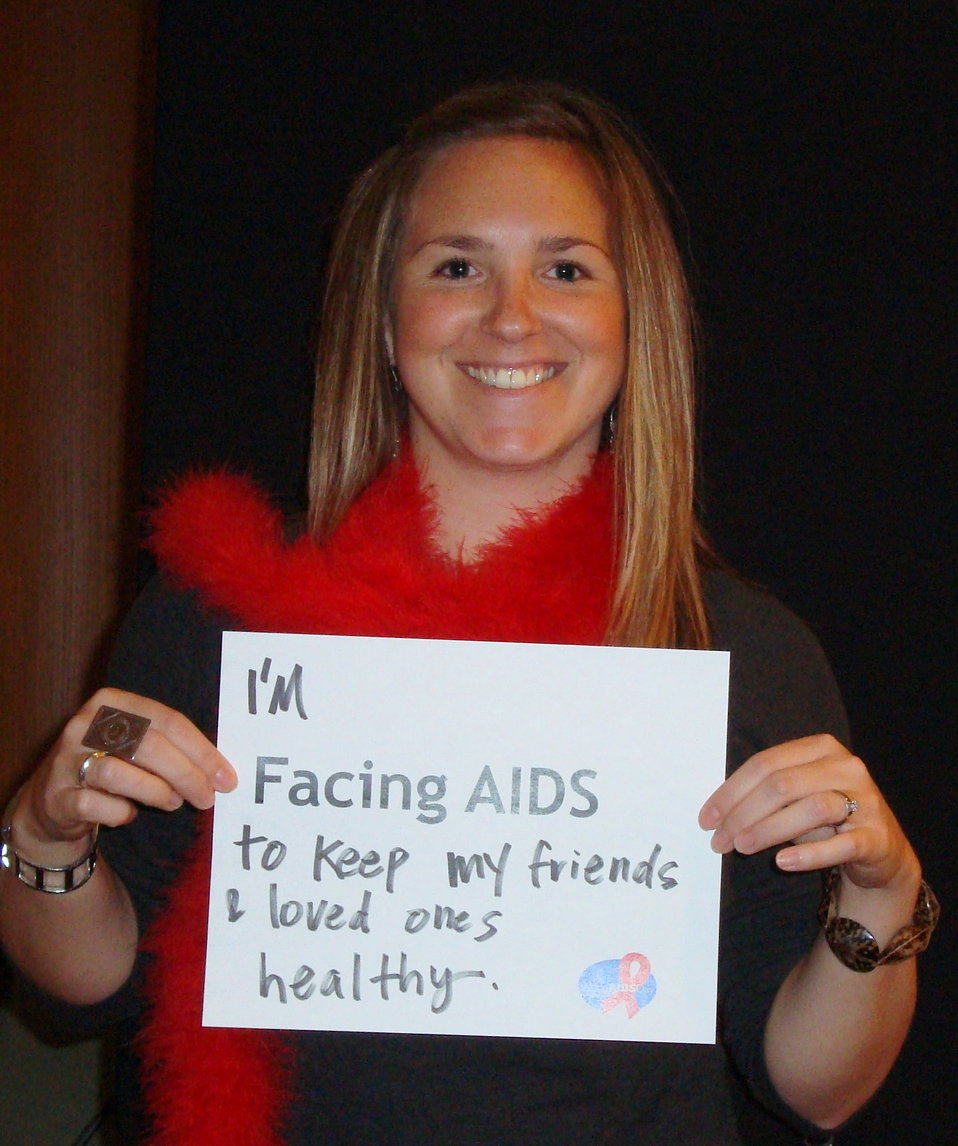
FacingAIDSCampaign 009